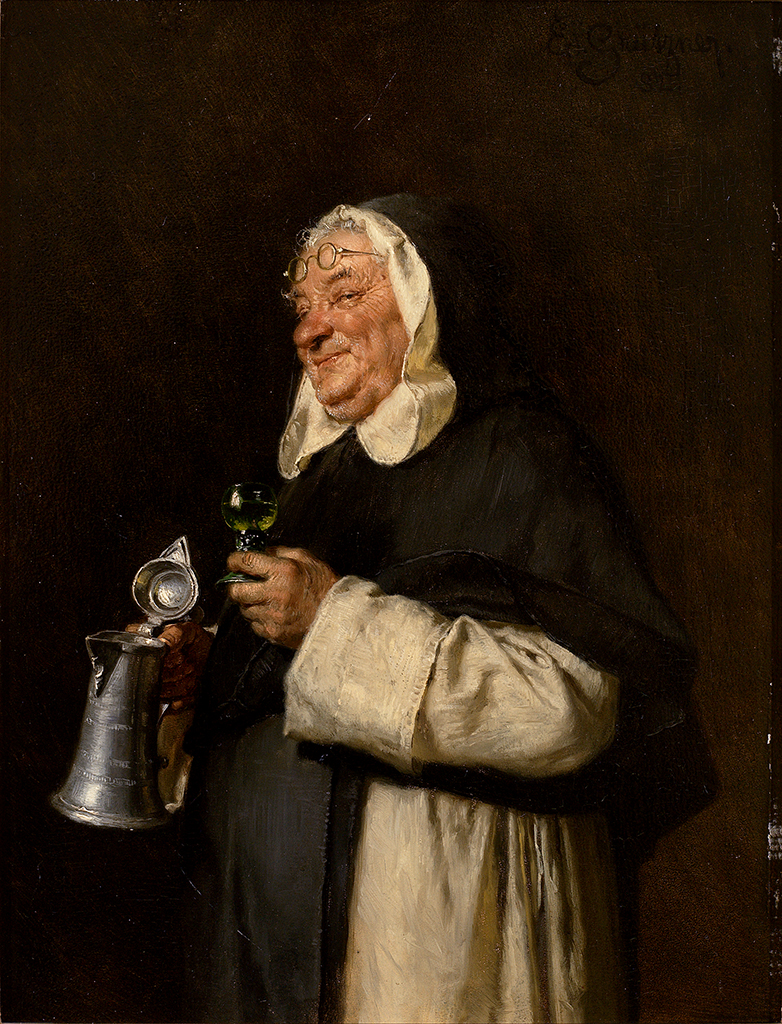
Mönch bei der Weinverköstigung. Öl/Holz. 30 x 23 cm. Sign. und (18)82 dat.